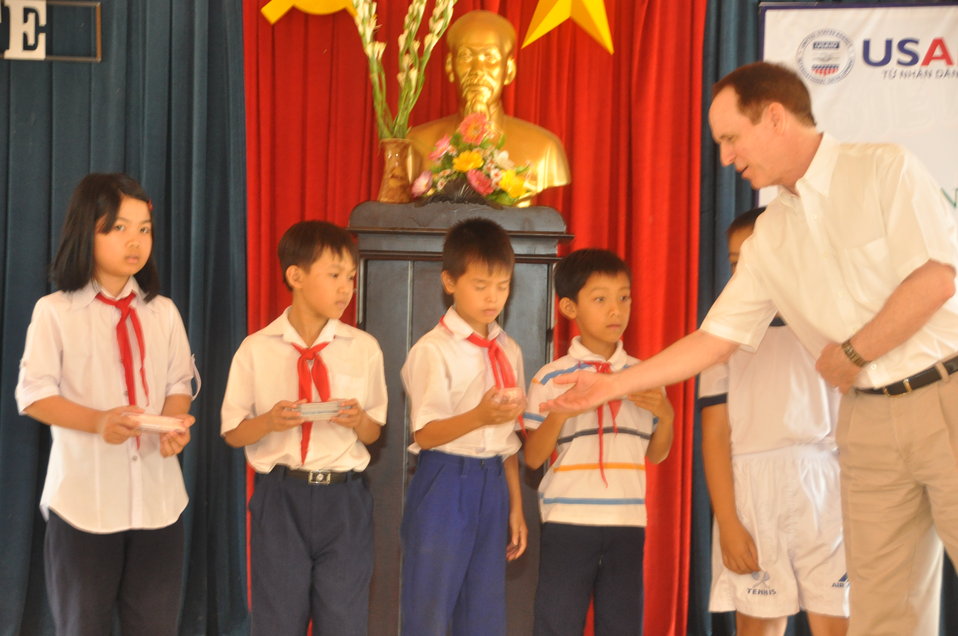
USAID Director Francis Donovan: chool children in Dak To, Kon Tum Province, receive eyeglasses under a program supported by USAID and partners HKI and World Leraning